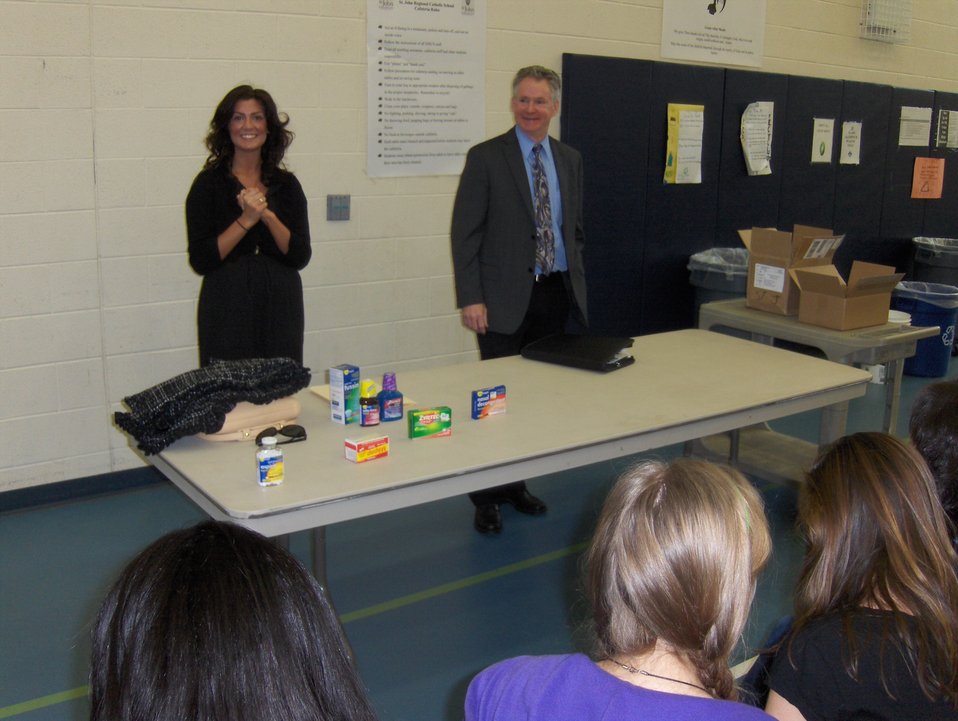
NDFW Event in Frederick, Maryland

Pharmacists Anne Marie Merritt and Dave Fulton showed over the counter drugs to 7th and 8th graders in St. John Regional Catholic School during a school assembly during National Drug Facts Week.